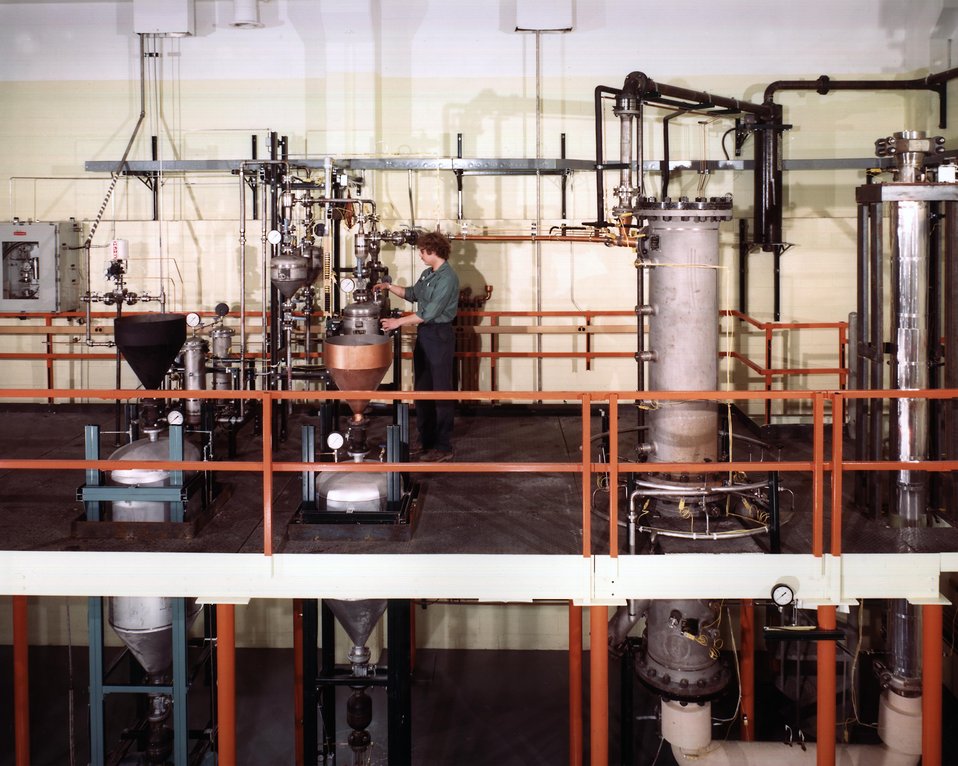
ATMOSPHERIC FLUIDIZED-BED COMBUSTOR BEING OPERATED AT ARGONNE NATIONAL LABORATORY TO PROVIDE INFORMATION.

FOR DOE'S PROGRAM TO DEVELOP CLEAN COAL-BURNING BOILERS AND PROCESS HEATERS FOR INDUSTRIAL APPLICATIONS. AT THE COMBUSTION TEMPERATURES OF 1500-1600 DEGREES F, THE LIMESTONE CHEMICALLY ABSORBS THE SULFUR CONTAINED IN THE COAL AND PREVENTS IT FROM BEING RELEASED INTO THE ATMOSPHERE. THE RELATIVELY LOW TEMPERATURES ALSO INHIBIT THE FORMATION OF LARGE AMOUNTS OF NITROGEN OXIDE, WHICH IS A MAJOR POLLUTANT IN CONVENTIONAL COAL BURNING.